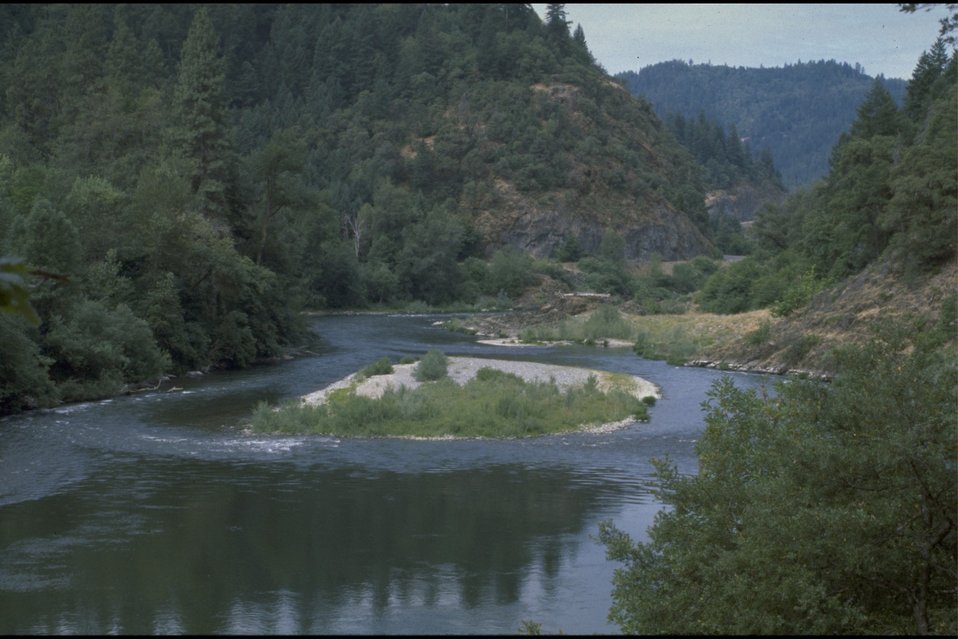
Rogue River - Island between Indian Mary Park and Rainbow. Hellgate Recreation Section.